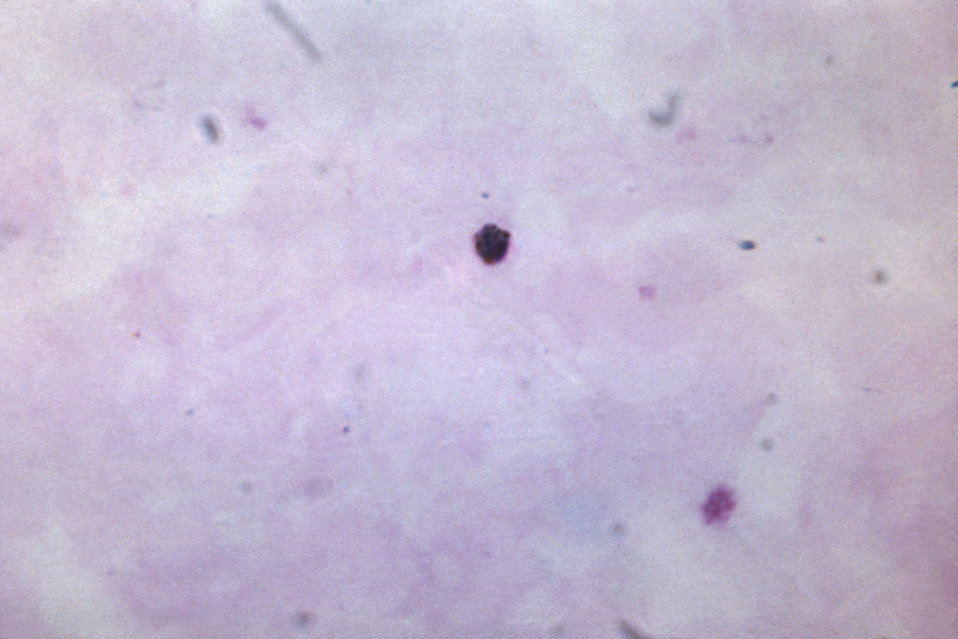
This thick film specimen reveals a growing Plasmodium malariae trophozoite.